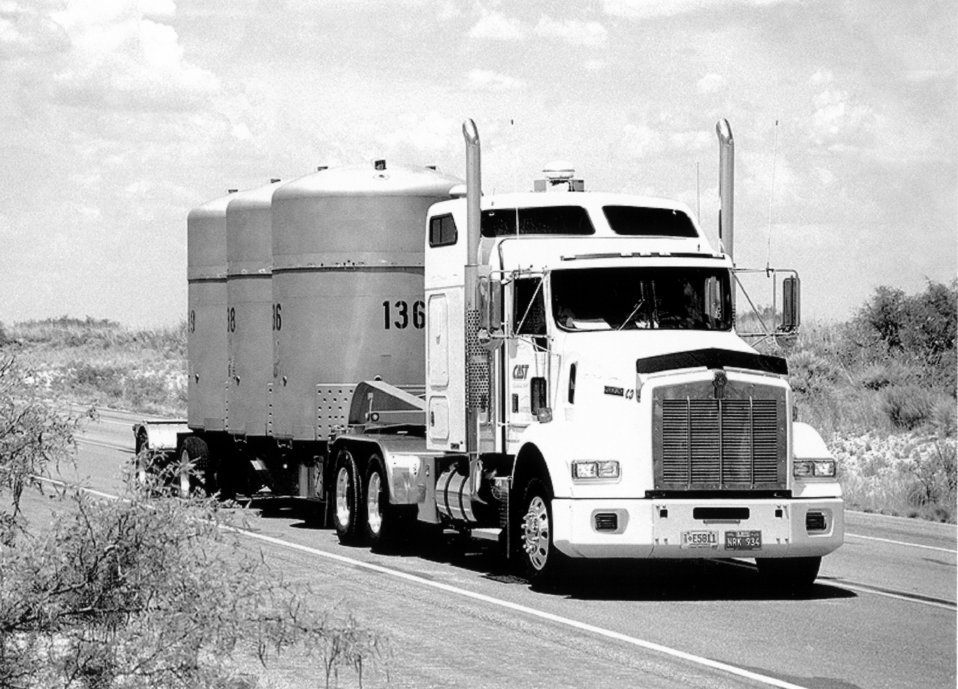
THIS MARKS THE 100TH SHIPMENT OF ROCKY FLATS TRANSURANIC WASTE THAT TRAVELED SAFELY TO WIPP.

IN THE SPRING OF 2001, DOE ROCKY FLATS ENVIRONMENTAL TECHNOLOGY SITE COMPLETED ITS 100TH SHIPMENT OF TRANSURANIC WASTE TO THE WASTE ISOLATION PILOT PLANT (WIPP) IN CARLSBAD, N.M. WASTE DRUMS DESTINED FOR WIPP MUST BE PACKAGED IN ACCORDANCE WITH STRICT QUALITY CONTROLS. CHARACTERIZATION OF A SINGLE DRUM OF TRANSURANIC WASTE CAN TAKE TWO TO FOUR WEEKS.